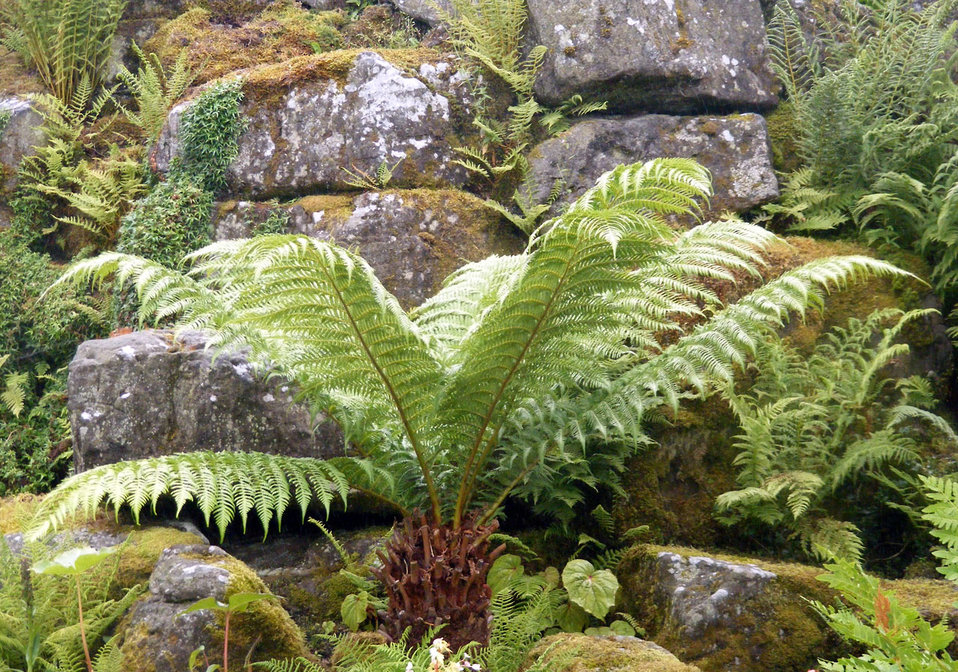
Tree fern in garden.